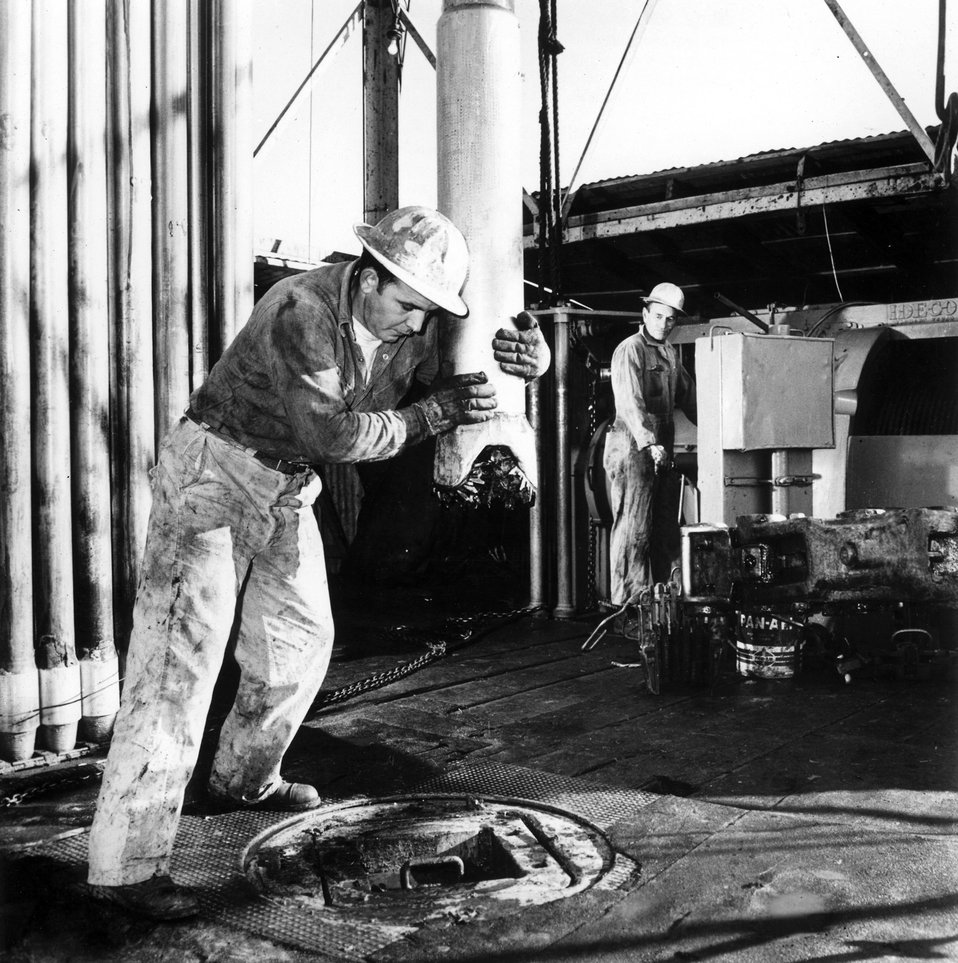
Worker on an offshore drilling rig. c. undated